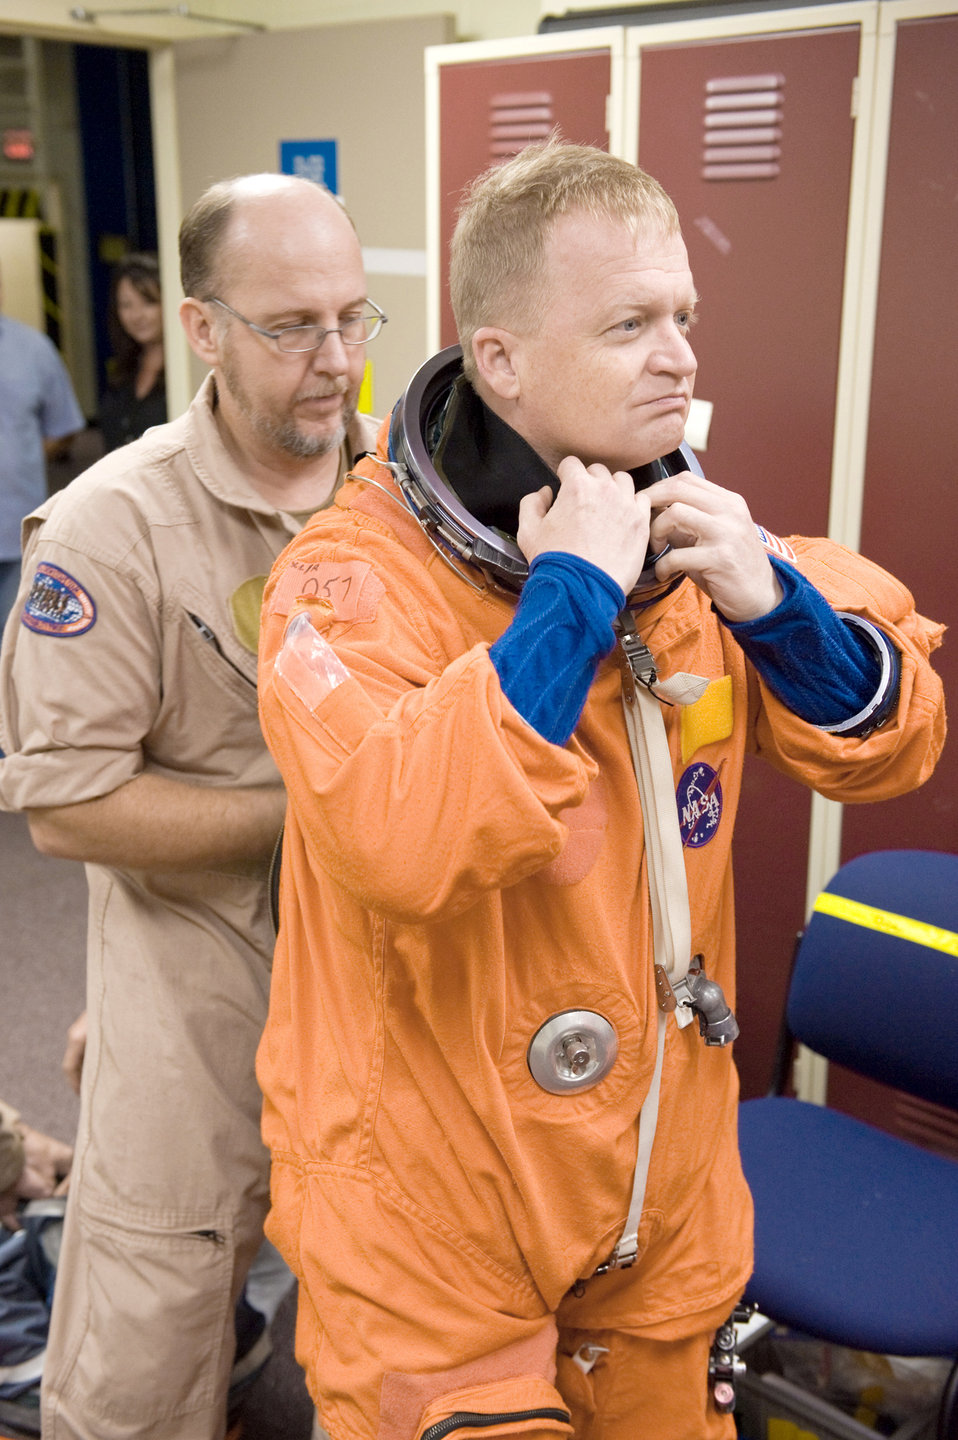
Airman to pilot final flight of Discovery

NASA astronaut Col. Eric Boe dons a training version of his shuttle launch and entry suit Sept. 24, 2010 in preparation for a training session in the Space Vehicle Mock-up Facility at NASA's Johnson Space Center in Houston. United Space Alliance suit technician Steve Sholtz assisted Colonel Boe during the session. Colonel Boe is a STS-133 pilot.